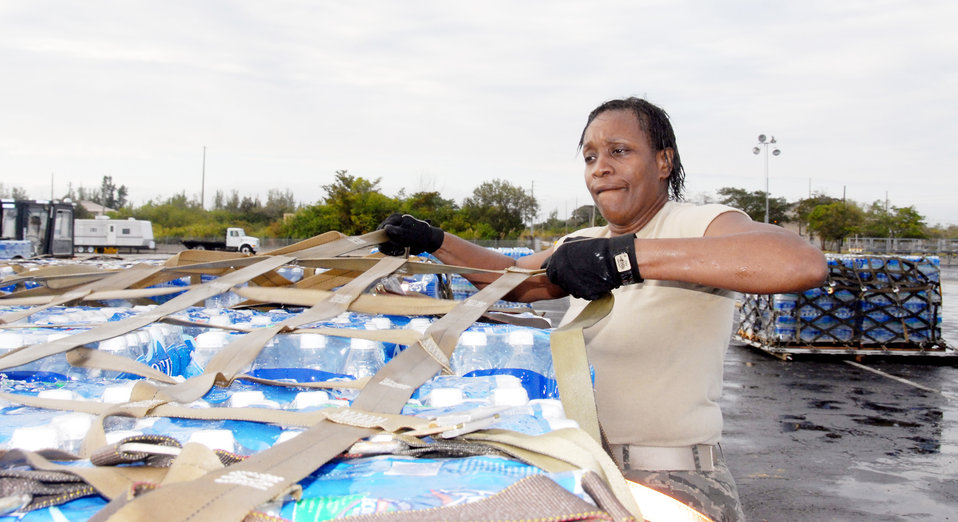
Reservists load supplies for Haiti relief

Tech. Sgt. Valerie McFadden builds pallets of water for Haiti relief efforts Jan. 17. 2010, at Homestead Air Reserve Base, Fla. Sergeant McFadden volunteered to provide essential support to the 70th Aerial Port Squadron for Haiti relief. Seargent McFadden is a aerial port specialist with the 46th Aerial Port Squadron at Dover Air Force Base, Del.